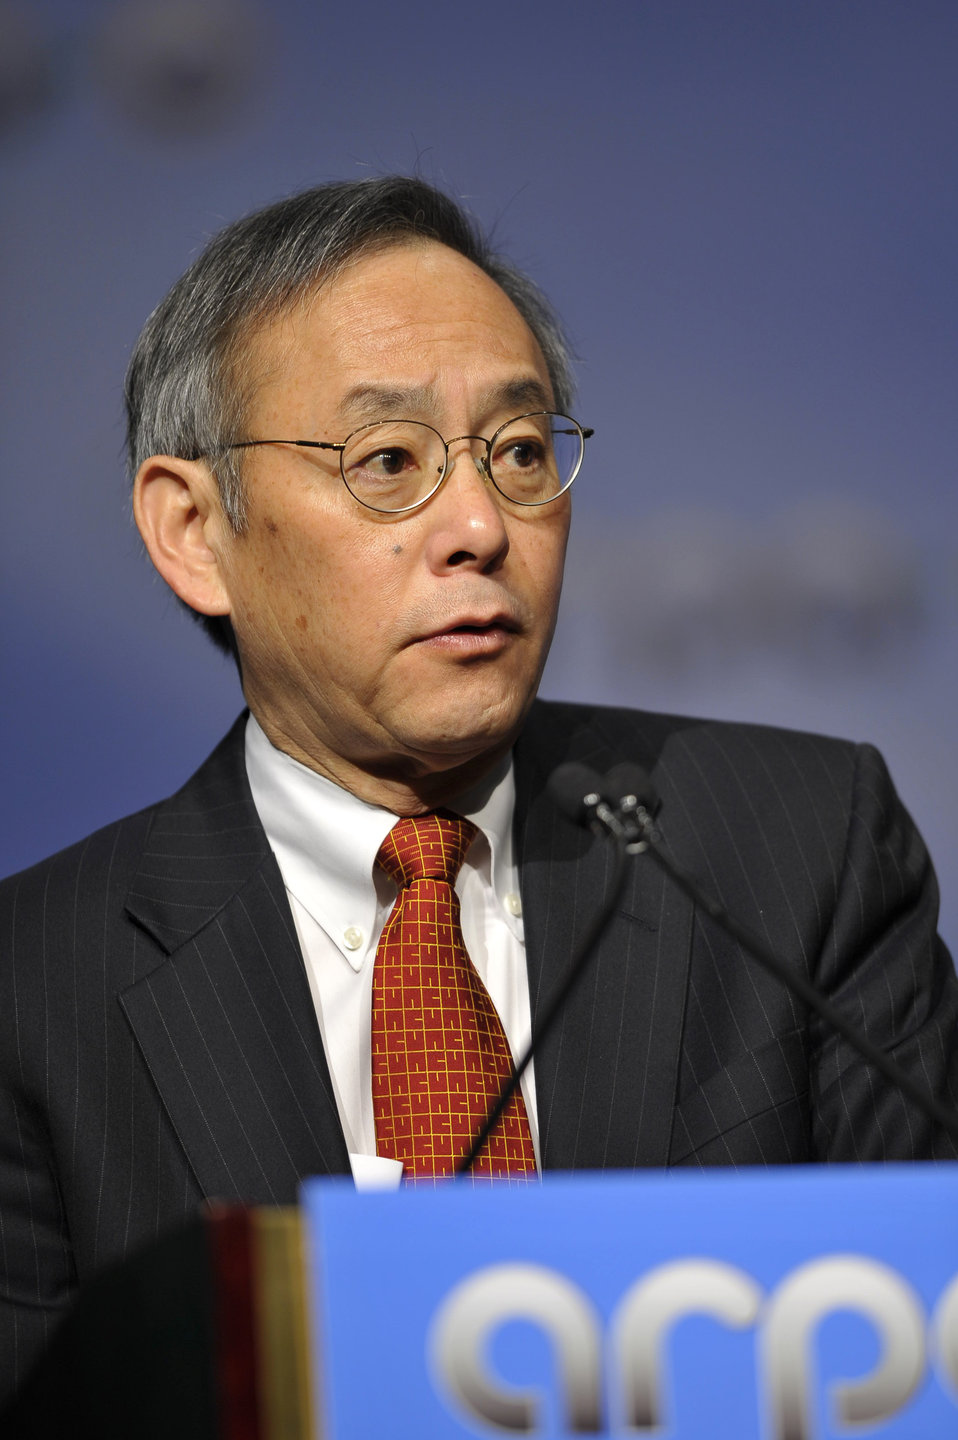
ARPA-E Energy Innovation Summit 2011, 63 of 83

Steven Chu, Secretary, United States Department of Energy.